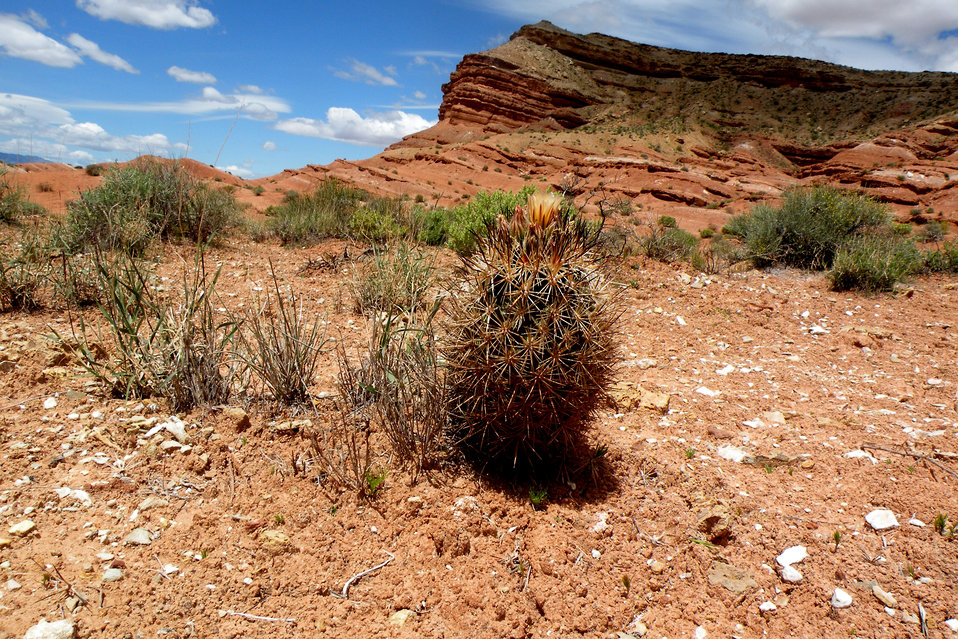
Siler pincushion cactus (Pediocactus sileri)

Siler pincushion cactus is restricted to clay soils of the Moenkopi Formation. It occurs on rolling hills and bluffs in sparsely vegetated desert shrub communities between 3,000 and 5,000 ft. in elevation. Siler Pincushion cactus is endemic to northern AZ and southwestern UT. It is listed threatened.